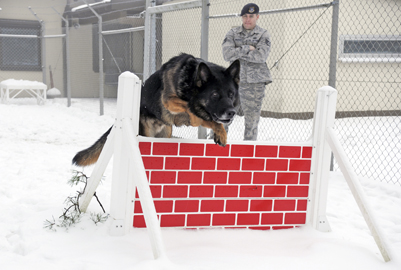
Military working dogs

Robson, a 5-year-old German shepherd, jumps over an obstacle Dec. 29, 2010, at the 52nd Security Forces Squadron military working dog facility at Spangdahlem Air Base, Germany. Military working dogs require extra care during the winter months because of the harsh weather and salt on the roads that irritates the dog's underbelly and paws. The dogs are also given time daily to play in the snow to help them acclimate to the temperature and the snow.